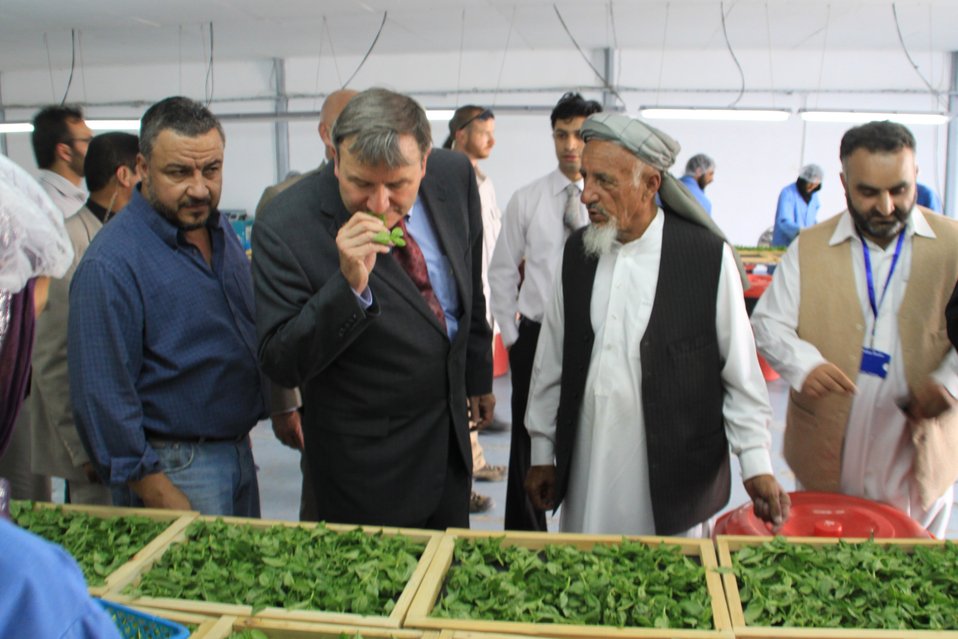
Badam Bagh Farm